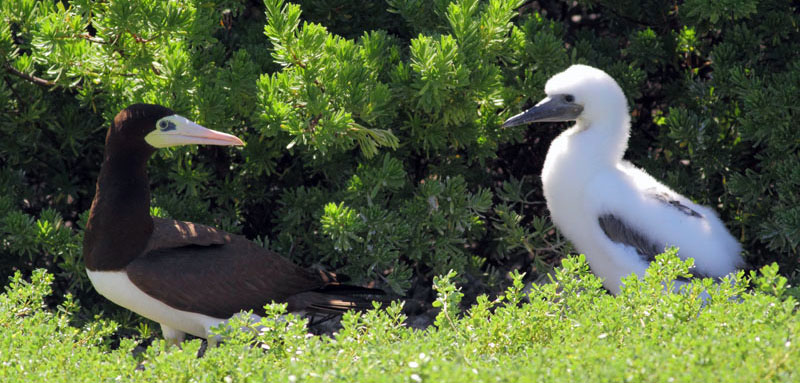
Brown Booby parent and chick on Pedro Cay, Jamaica Credit SCSCB

Brown Booby parent and chick on Pedro Cay, Jamaica.